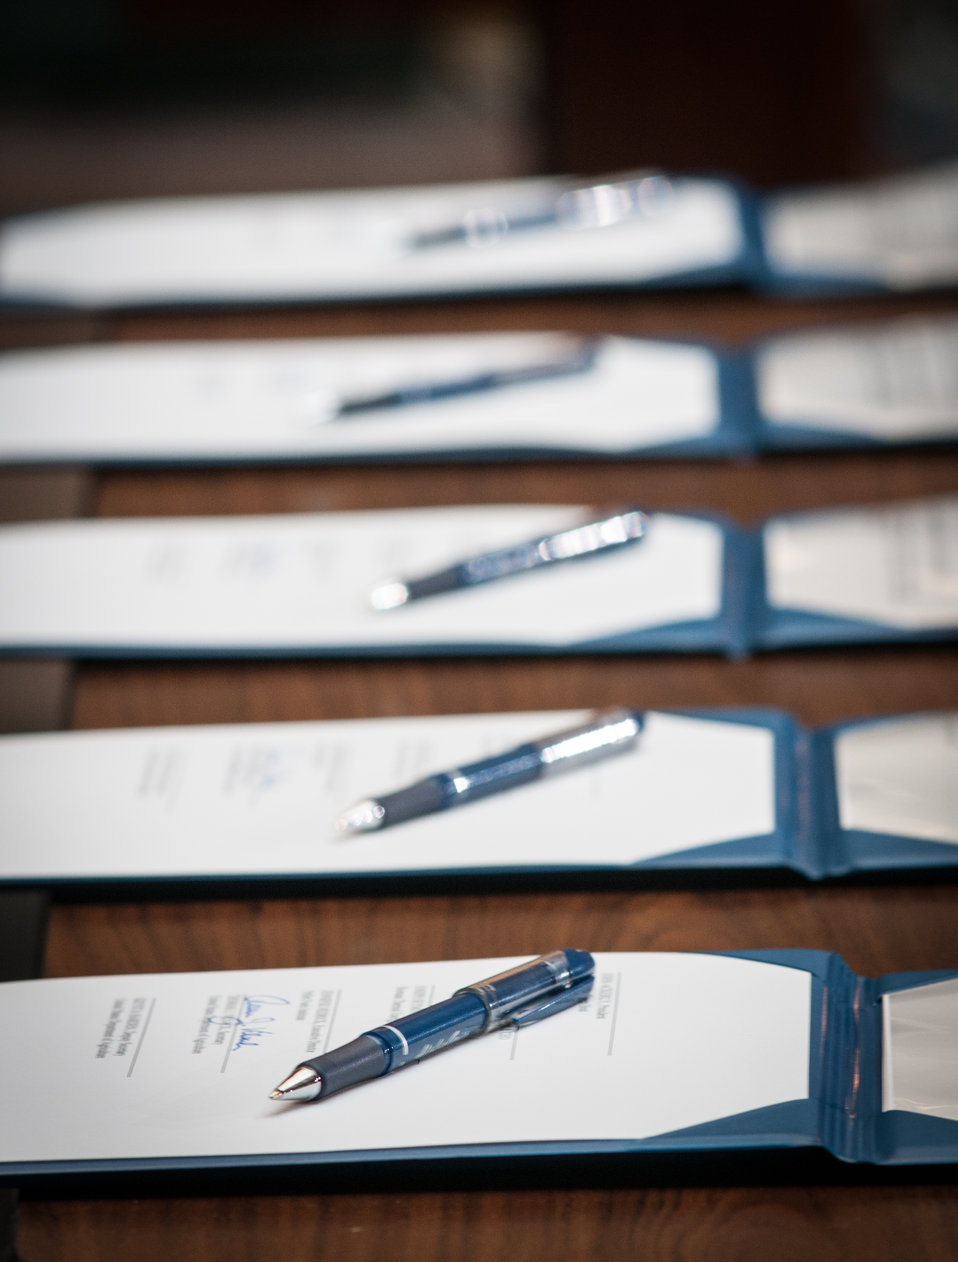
U.S. Department of Agriculture (USDA) Deputy Secretary Krysta Harden hosts the signing of the USDA Bioenergy Memorandum of Understanding and was joined by leaders from, Biomass Power Association, President and CEO Bob Cleaves; Pellet Fuels Institute Executive, Director Jennifer Hedrick; Biomass Thermal Energy Council, Executive Director Joseph Seymour; and Alliance for Green Heat, President John Ackerly, for the announcement of the new partnership agreement, at the USDA Headquarters, in Washington, D.C., on Wednesday, September 11, 2013. Moderating the event is Under Secretary for Rural Development Doug O’Brien.
The partnership agreement focuses on promoting wood energy nationwide as a means to address fire risks, bolster rural economic development, improve air quality, and help meet the Obama Administration’s renewable energy and energy efficiency goals. These organizations support the use of wood energy across the scale of users – from residential users, to commercial and intuitional facilities, to industrial production of heat and or electricity to drive businesses and feed the electrical grid.
Under the terms of the five grants announced by Deputy Secretary Harden, private, state and federal organizations will work together to stimulate the development of additional wood energy projects in their states. Collectively, $2.9 million will be spent o this effort -- $1.1 million on federal funds and $1.8 million in non-federal funds. For more information o0n the cooperative agreement program, visit na.fs.fed.us.werc/wood-energy/ USDA Photo by Lance Cheung.